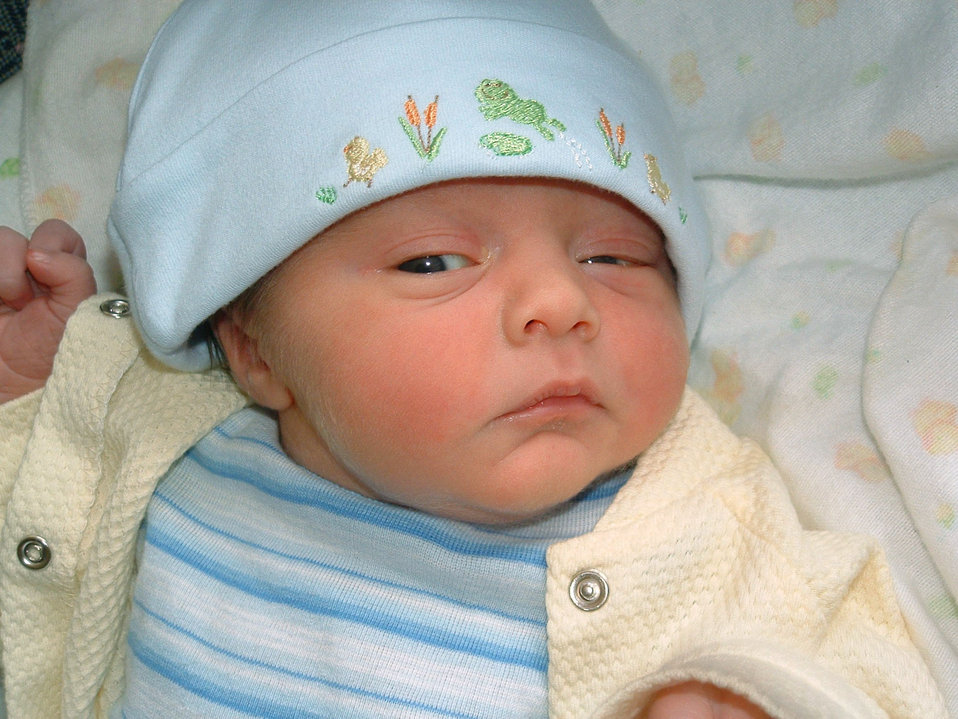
Baby born on way to hospital

LAJES FIELD, Azores -- Morgon "Jetta Boy" Damron was born on the highway in his father's Jetta on the way to a Portuguese hospital.